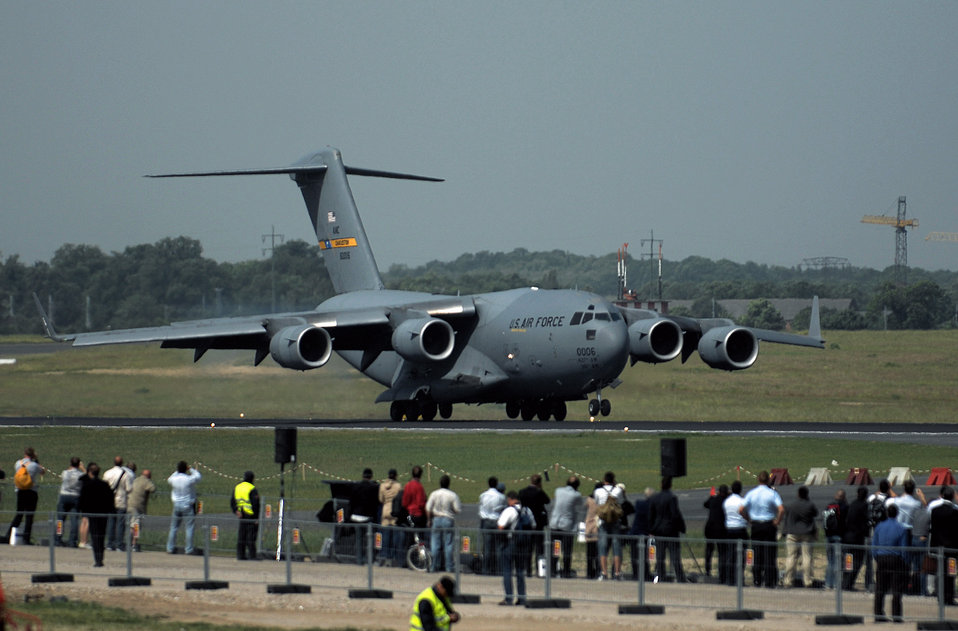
US-German exchange pilots showcase interoperability

Lt. Col. Marc Beutler, a German air force exchange pilot assigned to the U.S. Air Force, and Capt. Rebecca Russo perform an assault landing (a short field landing capability) during a demonstration with the